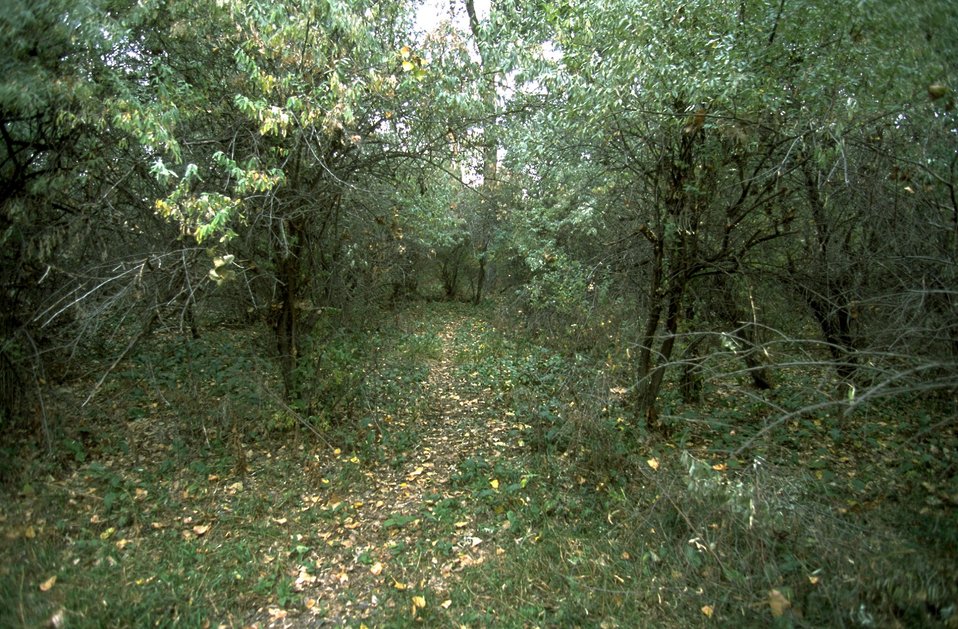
Howrey Island Nature Trail winding through dense river bottom vegetation - Yellowstone River